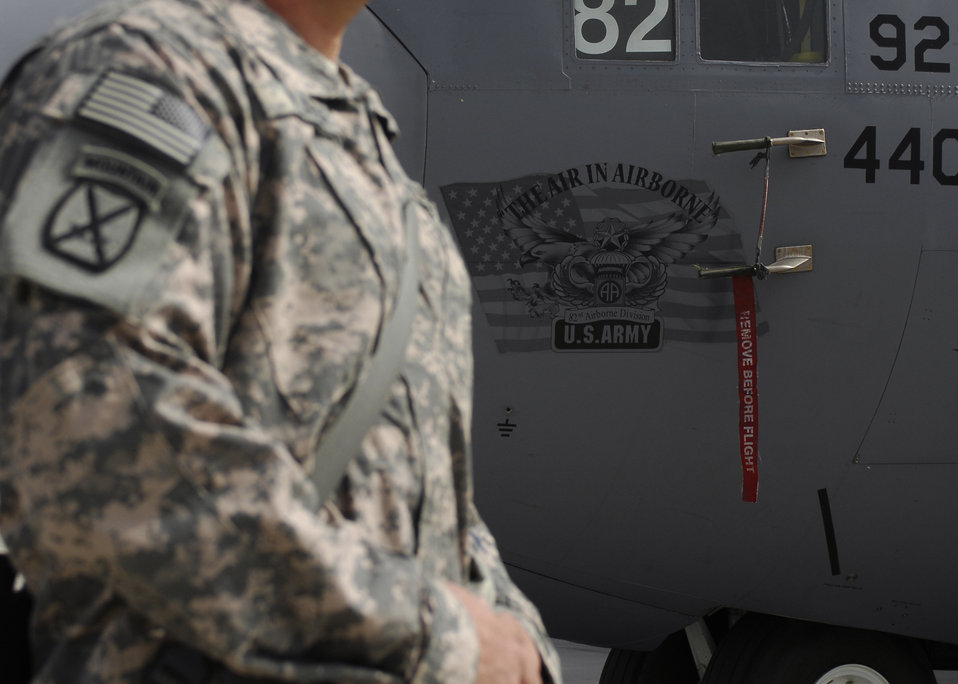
Air Force officials dedicate C-130 to Army's 82nd Airborne in Afghanistan

Servicemembers assembled on the flightline to tour a C-130 Hercules from the 440th Airlift Wing at Pope Air Force Base, N.C., Oct. 5, 2009, at Bagram Airfield, Afghanistan. The C-130 was dedicated to the Army's 82nd Airborne Division in honor of the cohesion of the Air Force and the Army in Afghanistan and was put on display for servicemembers to view the aircraft.